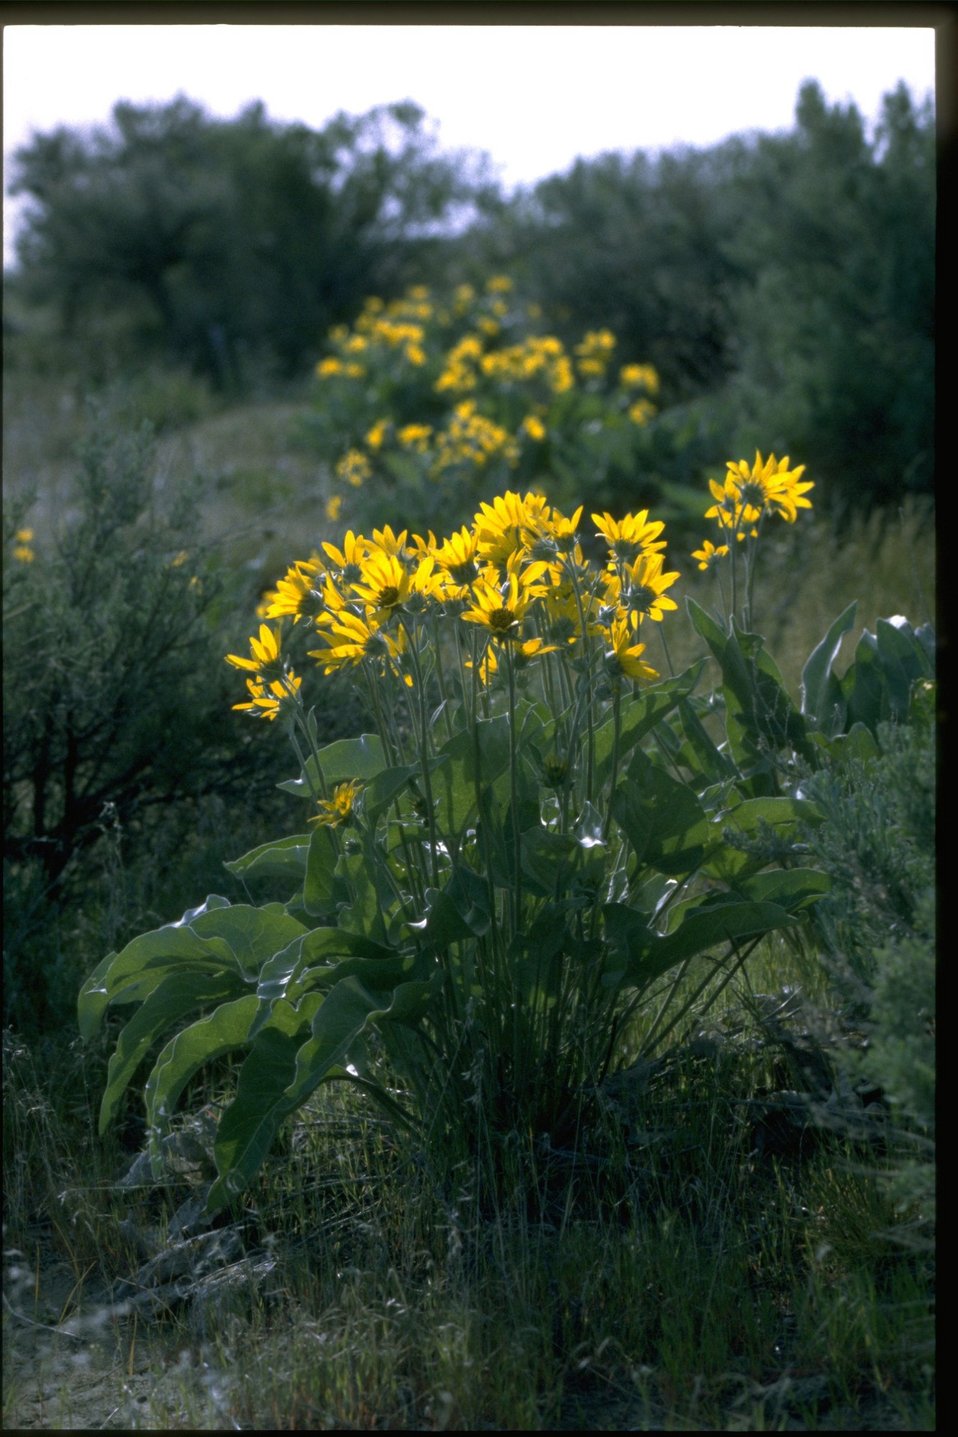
Arrowleaf Balsam Root (Balsamorhiza sagittata) habitat.